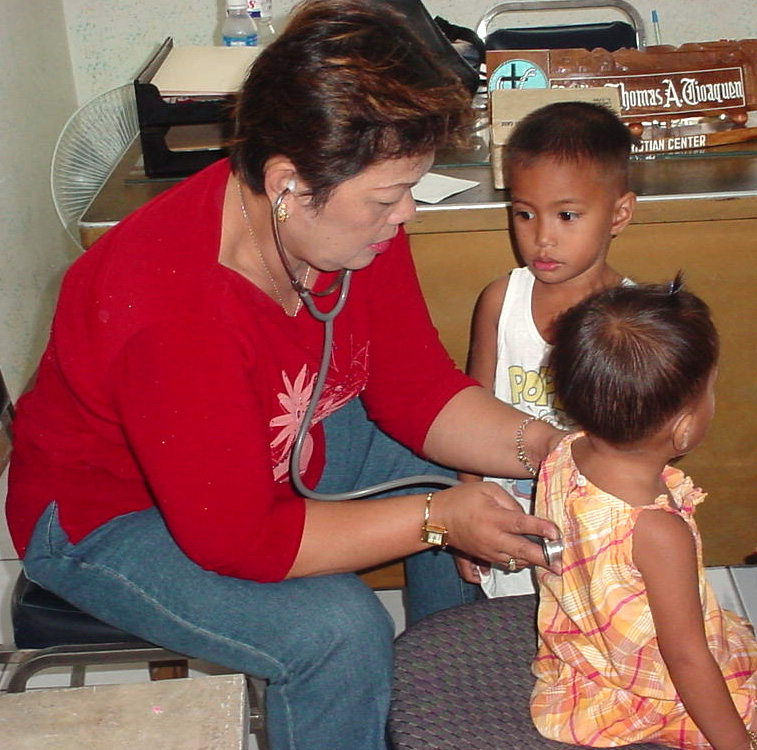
Donations bring joy to children

CLARK AIR BASE, Philippines -- A doctor examines children at the Clarkview Christian Center in the Philippines. In a goodwill effort, members of the 353rd Maintenance Squadron from Kadena Air Base, Japan, hired a dentist, two doctors and a nurse to visit the center for a full day.